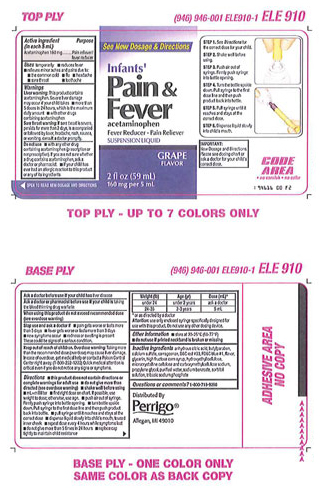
Recalled - Acetaminophen infant suspension liquid

November 1, 2013 – Product Recall – Perrigo Initiates Nationwide Voluntary Product Recall of Acetaminophen Infant Suspension Liquid, 160 Mg/5 Ml, Due to a Potential Defect with the Co-packaged Oral Syringe.